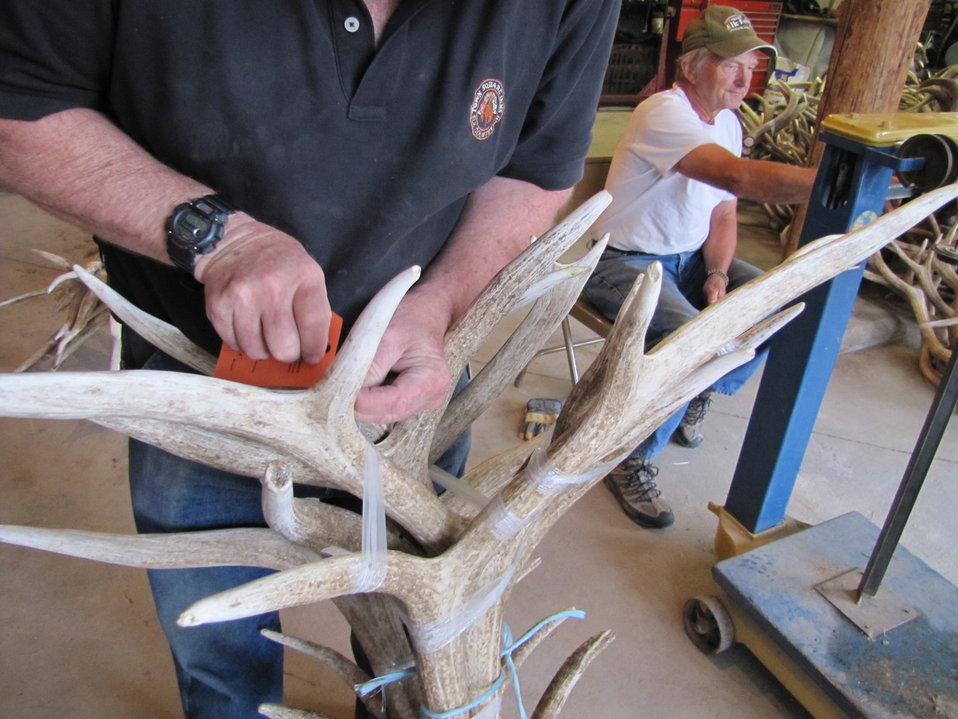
Tagging a Bundle of Antlers

As soon as a bundle of antlers is weighed, a tag listing both the lot number and the total weight of the antler bundle is attached. At the auction, the antlers are sold per pound, so bidders need to know the total weight of lots they may be interested in purchasing.